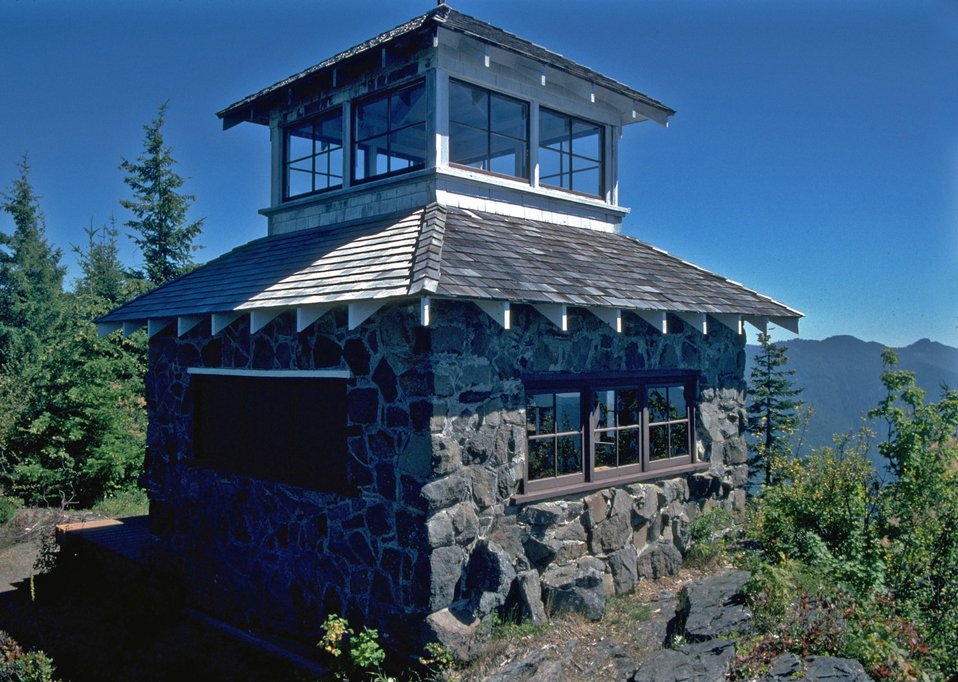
Peachuck Fur lookout in the Table Rock Wilderness Area.